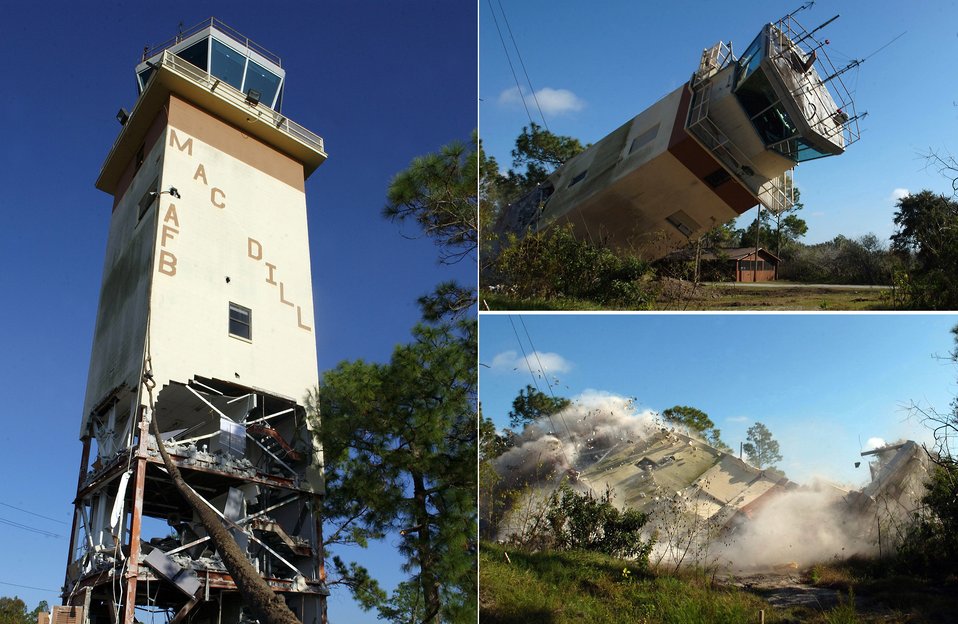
Demolition complete

MACDILL AIR FORCE BASE, Fla. (AFPN) -- Originally built in 1972, the old air traffic control tower was demolished here Jan. 5. The 6th Operations Group headed the demolition project to replace the base's old tower with a newer more efficient one.